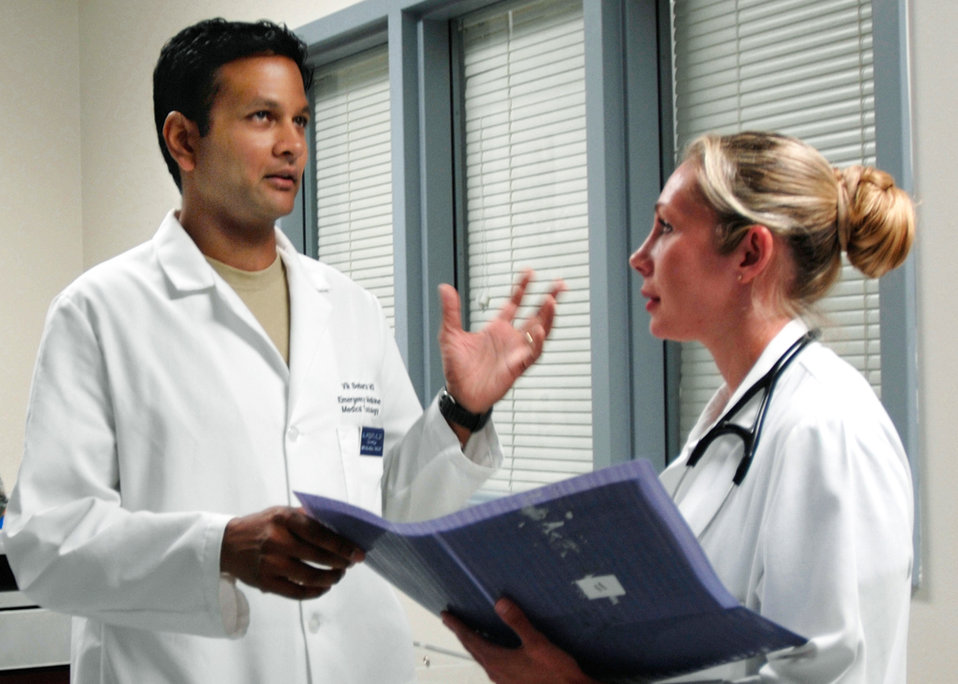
Cyanide researcher wins top science award

Emergency physicians Majs. (Drs.) Vikhyat Bebarta (left) and Annette Williams discuss patient care in the Wilford Hall Medical Center emergency department at Lackland Air Force Base, Texas. Dr. Bebarta received the Best Basic Science Research Award from the Society of Academic Emergency Medicine for his research on treatments for cyanide poisoning.